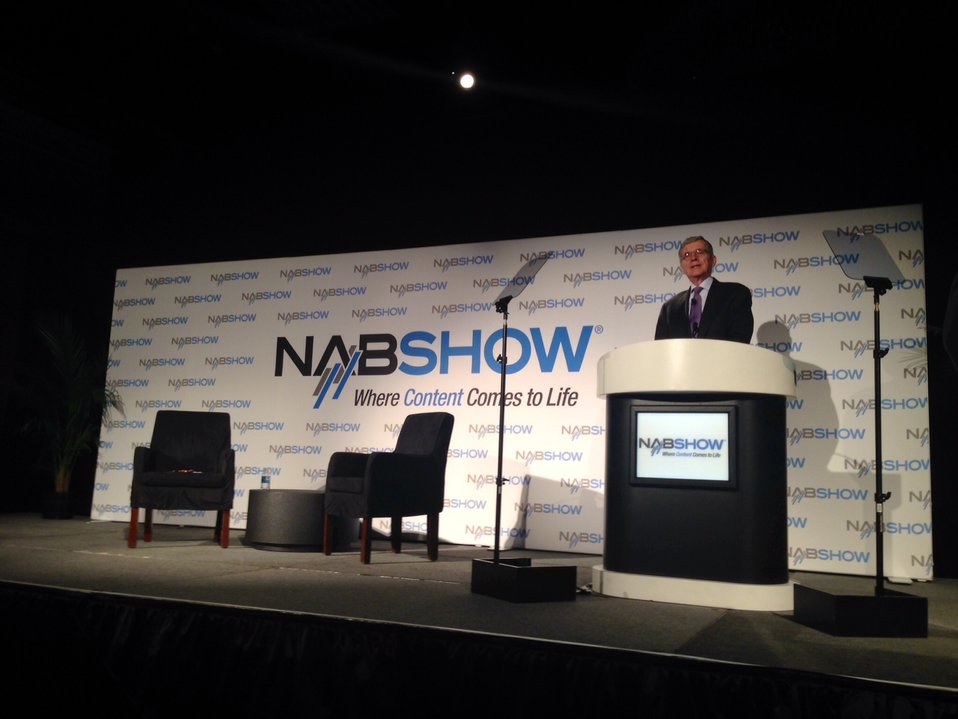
4.8.2014 NAB Show

FCC Chairman Tom Wheeler speaking at NAB Show 2014.